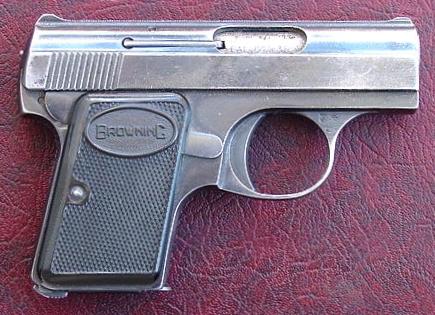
.25 ACP Baby Browning